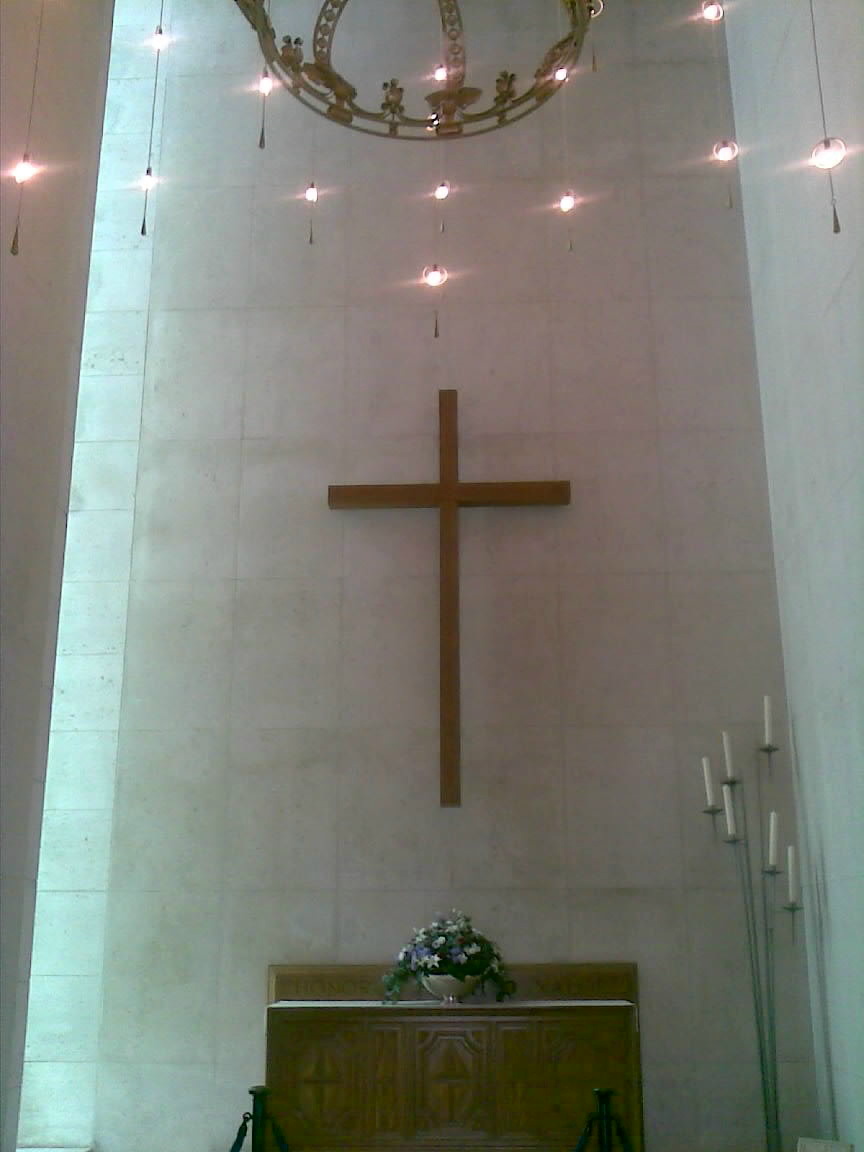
Deutsch: Netherlands American Cemetery, Kapelleninnenraum